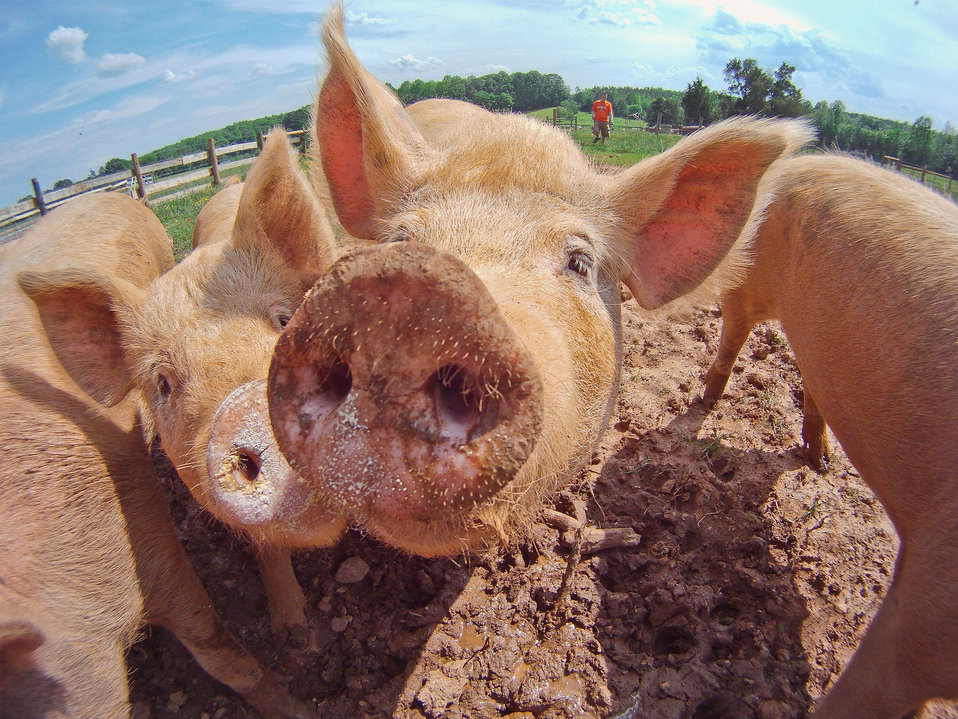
Pigs at Keenbell Farm are pasture raised by 3rd generation farmer CJ Isbell in Rockville, VA, on May 6, 2011. The farm was established in 1951, and produces grass-fed beef, pastured pork, and free-range eggs beyond organic standards. Keenbell Farms pork products range from sausage, to bacon, pork chops, roasts, bratwurst, and many more. A majority of their diet is grass, roots. They are offered corn, soybean, minerals, and a hay mixture that was developed by the farm. Raising the pigs on pastures reduces odor problems, and avoids hazardous waste issues by distributing the manure. Pastures and are rotated at least, every 90 days to allow the grass and land to re-grow. Keenbell and other farms produce meat products for Fall Line Farms food hub that offer a wide variety of household food staples and specialty items. Members can pick their customized orders from an ever changing inventory of fruits, vegetables, meats, soaps, eggs, cheeses, flowers, honey, pastas, sauces, syrups, baked goods, mushrooms, flour and grains. Suppliers post what they have to sell on Lulus Local Food online listing where customers (who pay seasonal dues) can make their selection. Every Thursday, suppliers team up with other suppliers to deliver customized orders to, one of several pick-up points, designated by the customer in or around the Richmond area.